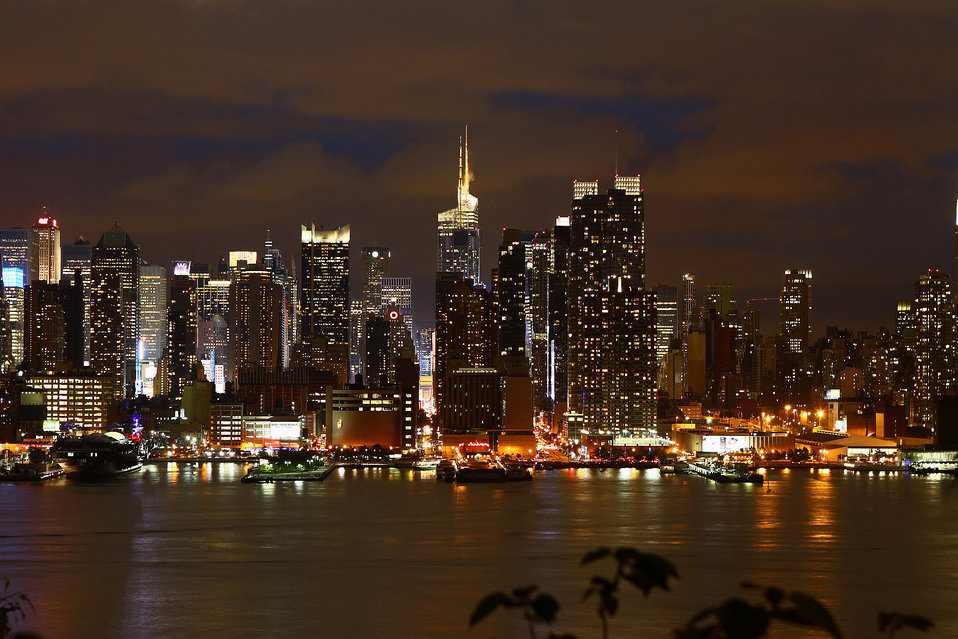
Manhattan

West side at night.